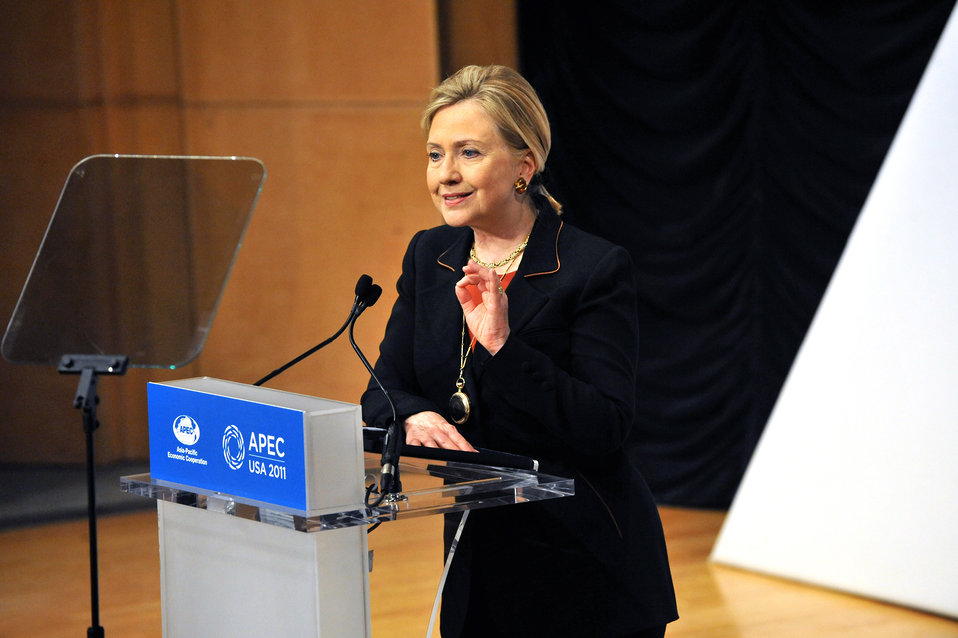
Secretary Clinton Delivers Remarks To Open Asia Pacific Economic Cooperation Meeting

U.S. Secretary of State Hillary Rodham Clinton delivers remarks to open the first Senior Officials Meeting (SOM) of the 2011 Asia Pacific Economic Cooperation (APEC) forum, in the amphitheater of the Ronald Reagan Building in Washington, D.C., on March 9, 2011.